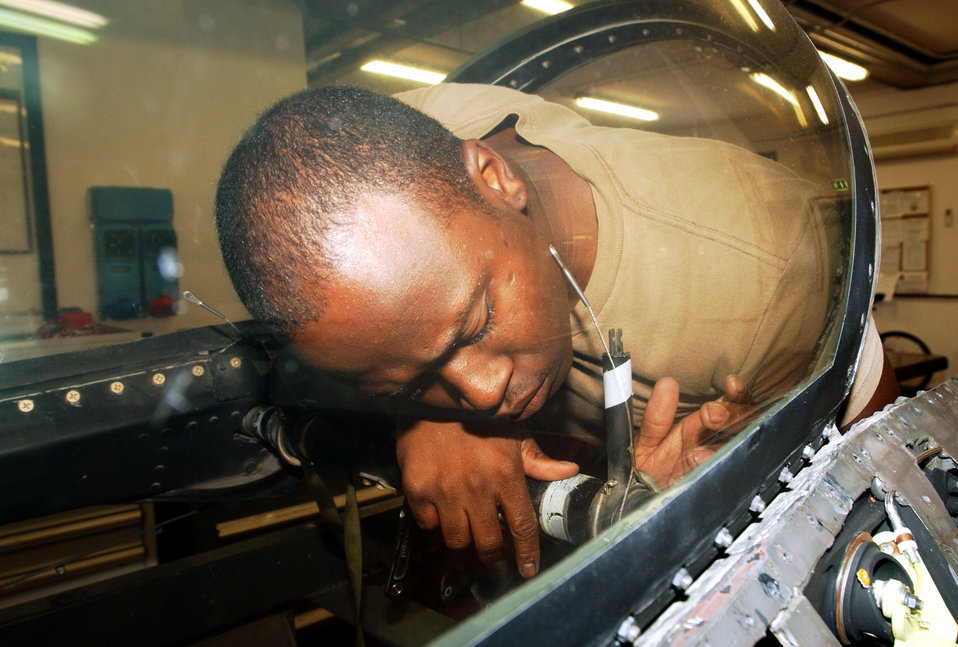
Tight inspection

AVIANO AIR BASE, Italy -- Airman 1st Class Anthony Allen inspects an F-16 Fighting Falcon canopy assembly at the 31st Maintenance Squadron egress shop here June 16. The 31st MXS egress shop is responsible for maintaining, inspecting and testing F-16 ejection seats and canopies.